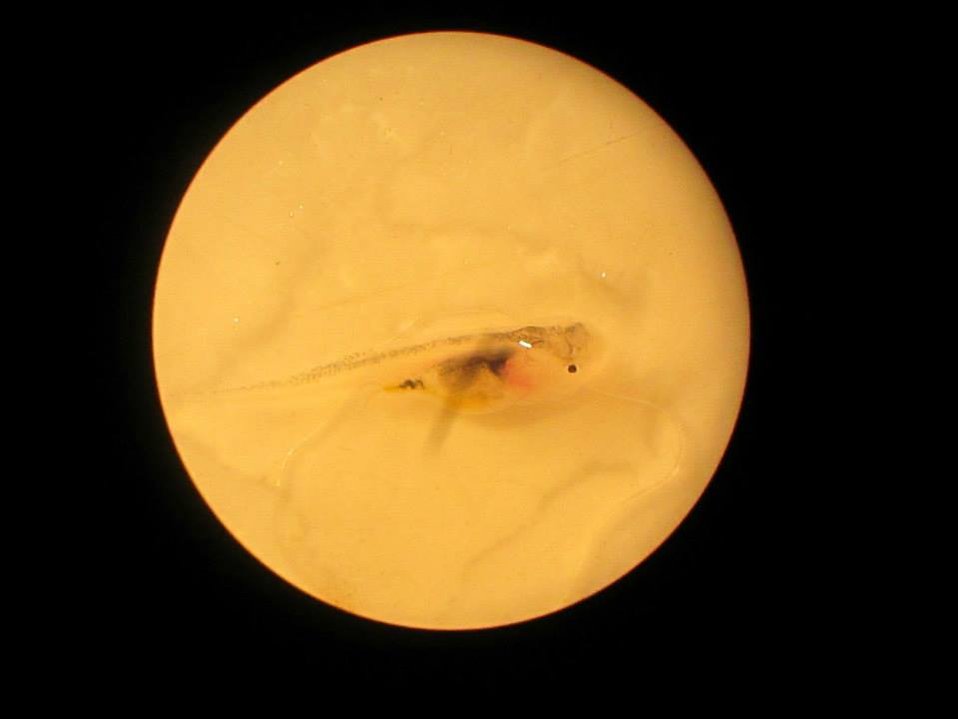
Paddlefish Fry

Paddlefish at 2 weeks old